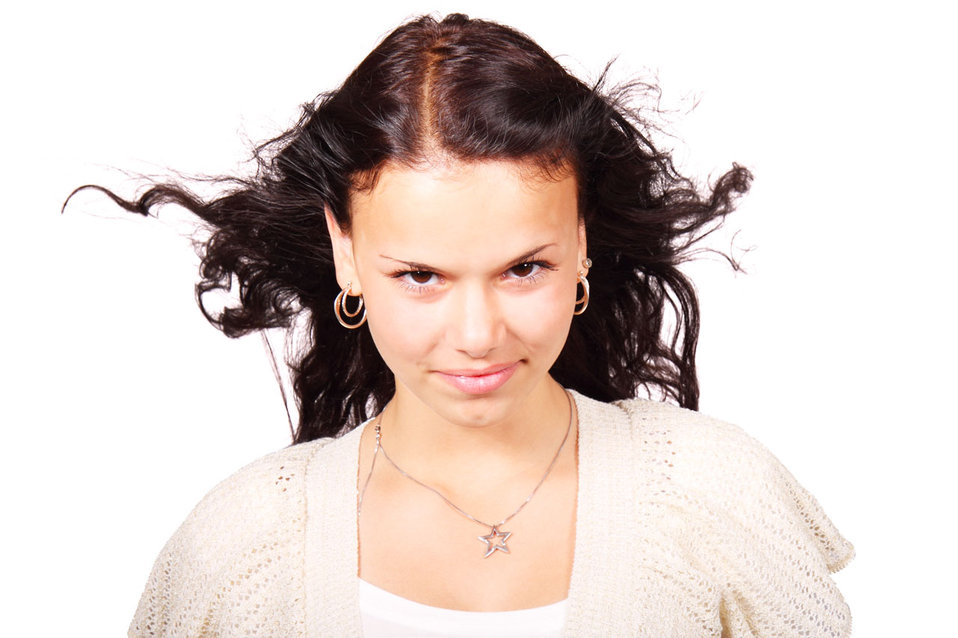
Hair in wind

Young woman with her hair windswept isolated on white background.